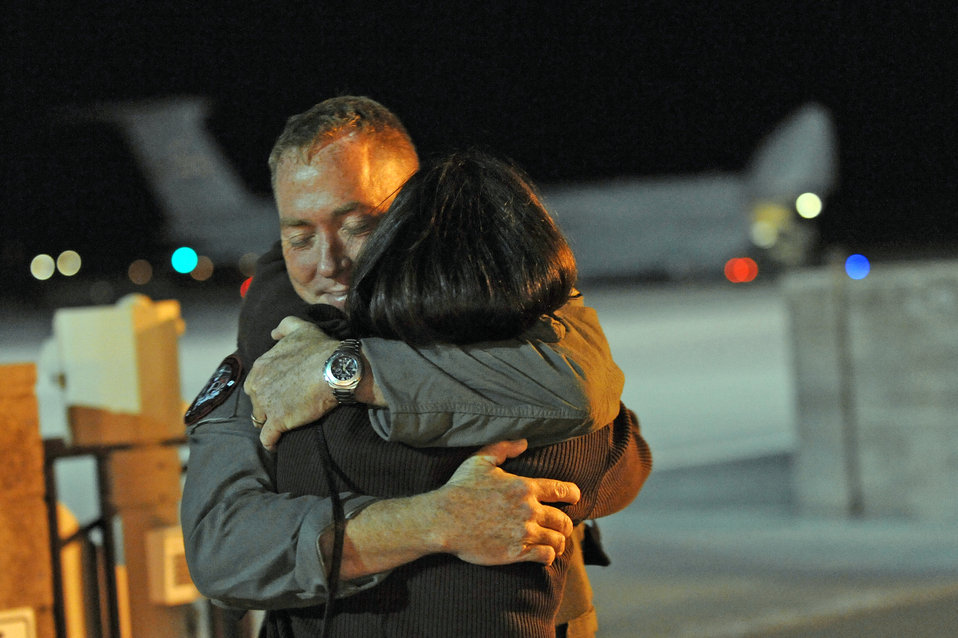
Creech Airmen return from Operation Unified Response mission

Maj. Jeffery Bright embraces his wife Diane March 5, 2010, at Nellis Air Force Base, Nev,. Major Bright is assigned to 11th Reconnaissance Squadron.